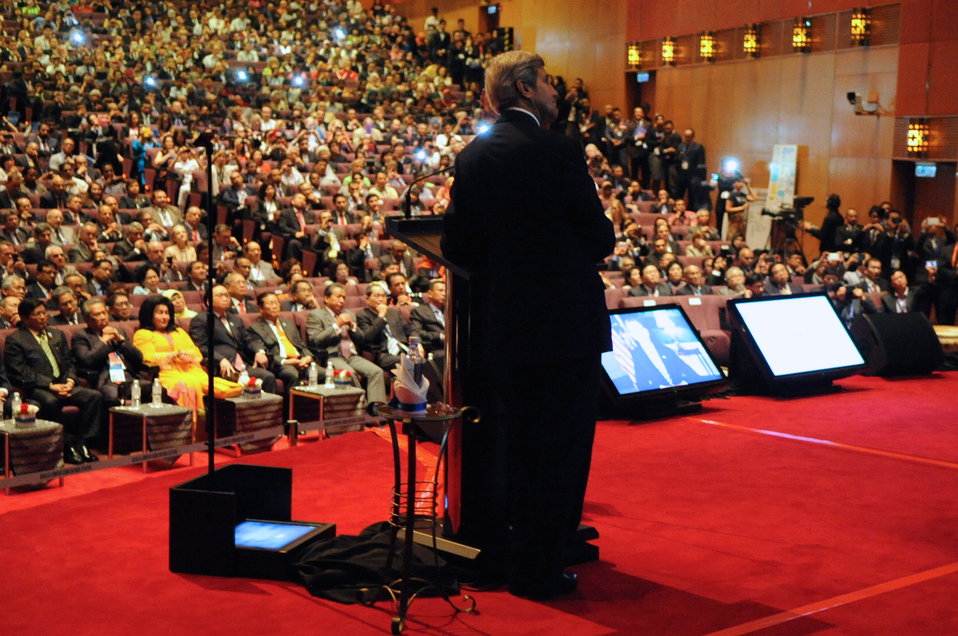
Secretary Kerry Watches Video Message From President Obama to Entrepreneurs

U.S. Secretary of State John Kerry watches a video address from President Obama to the Global Entrepreneurship Summit, during a visit to Kuala Lumpur, Malaysia, on October 11, 2013.